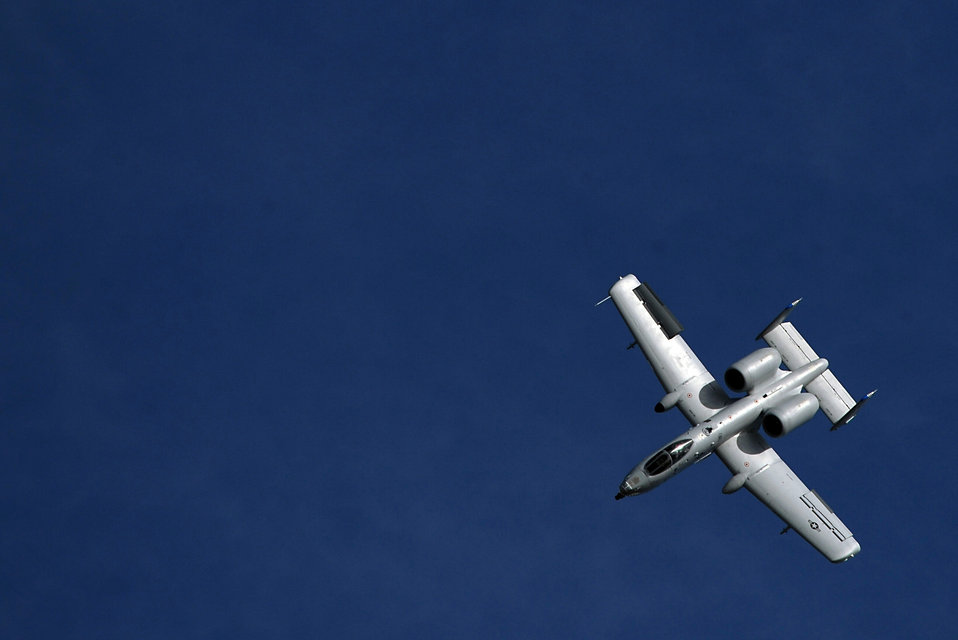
One more loop

Capt. Johnnie Green performs acrobatic maneuvers in an A-10 Thunderbolt II Jan. 29 during a certification flight at Moody Air Force Base, Ga. The A-10 East Coast Demonstration Team is standing up for the first time since its move from Pope AFB, N.C.